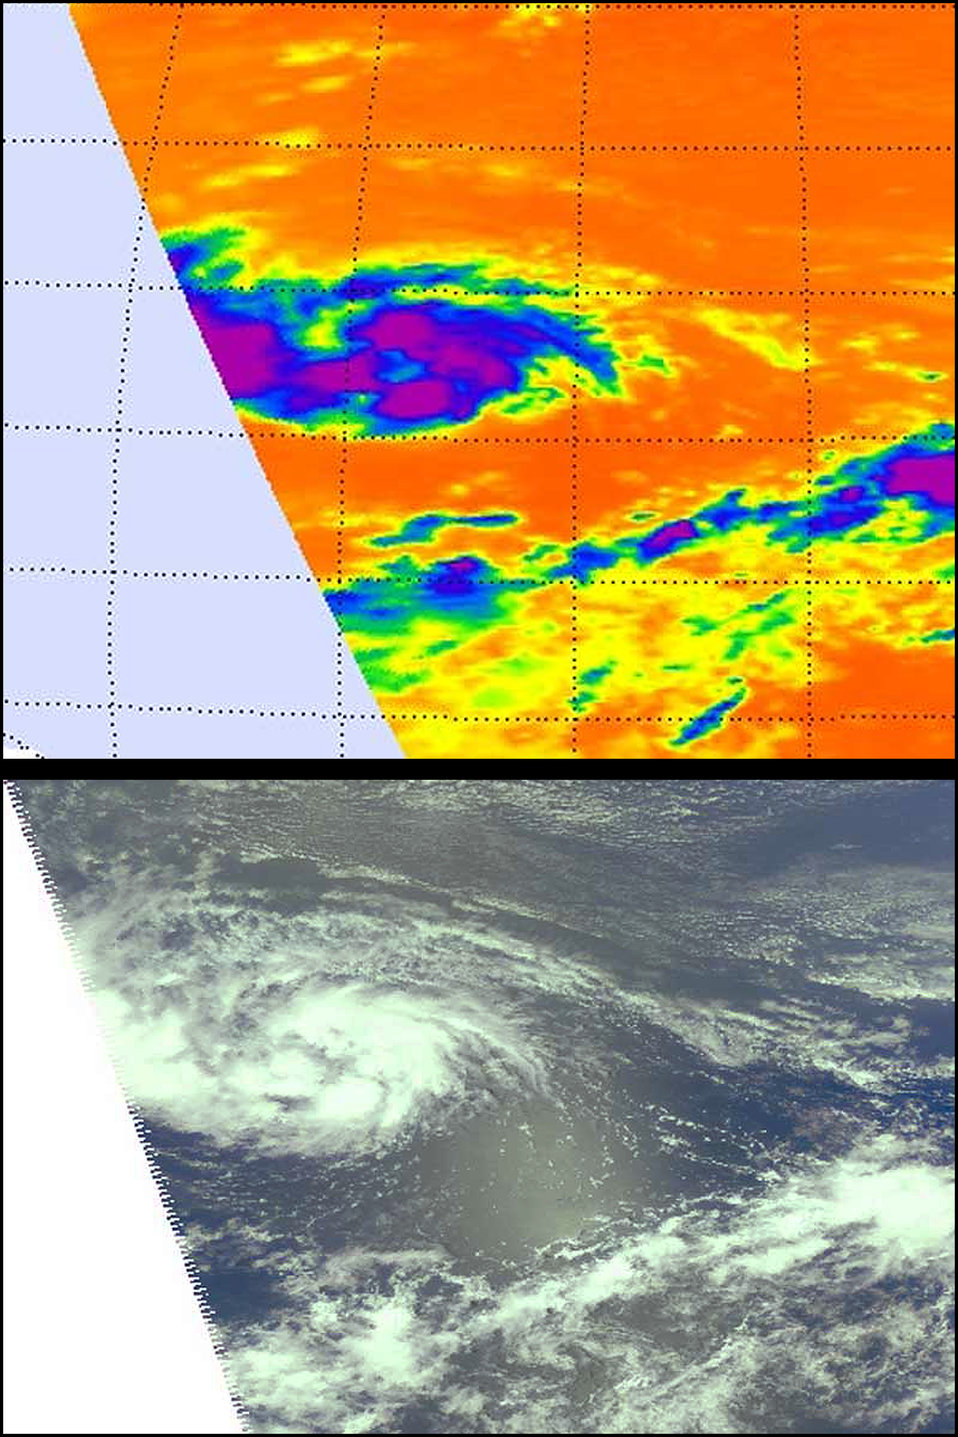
The NASA Satellite Images: